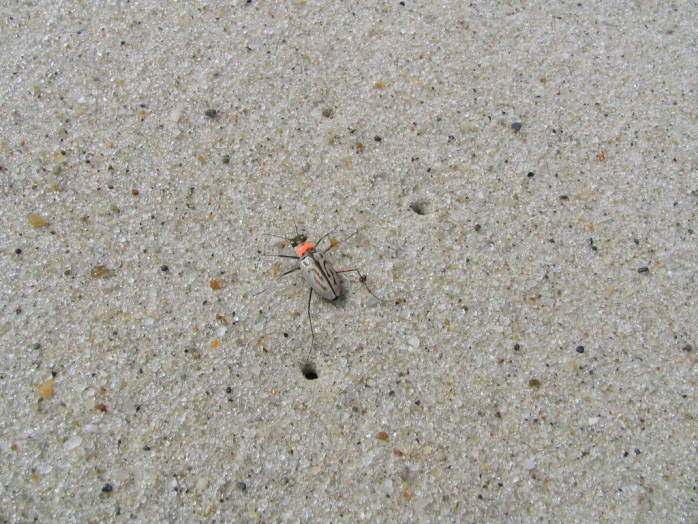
Northeastern beach tiger beetle marked with orange paint.